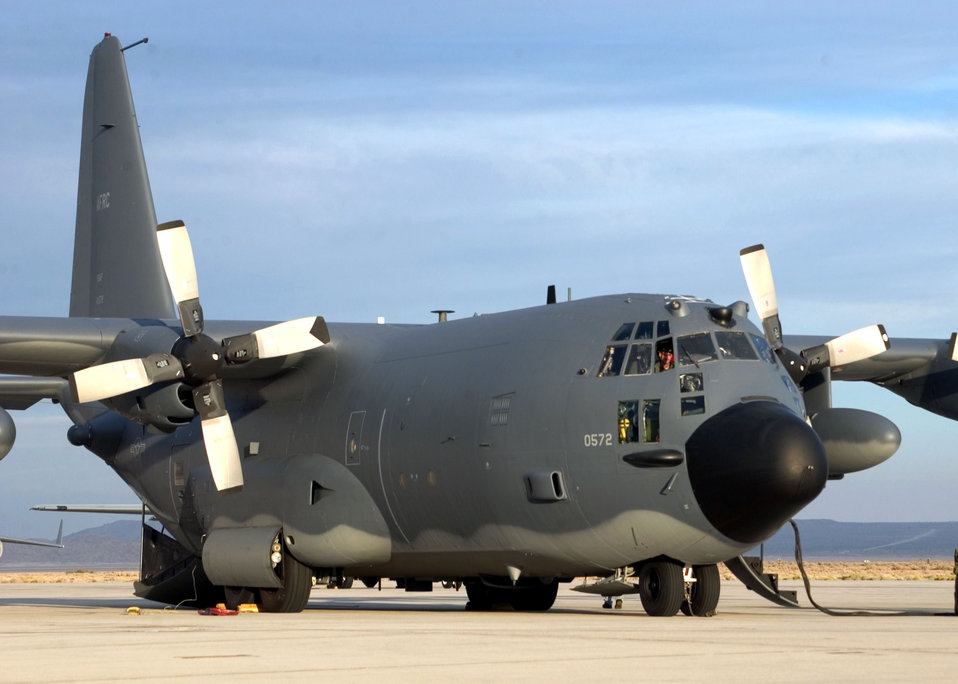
Combat Talon undergoes risk reduction testing

EDWARDS AIR FORCE BASE, Calif. -- An MC-130E Combat Talon I arrived here in October to receive avionics modernization program upgrades. After undergoing several months of modifications, 418th Flight Test Squadron Airmen successfully performed the aircraft's first risk reduction flight on March 15.